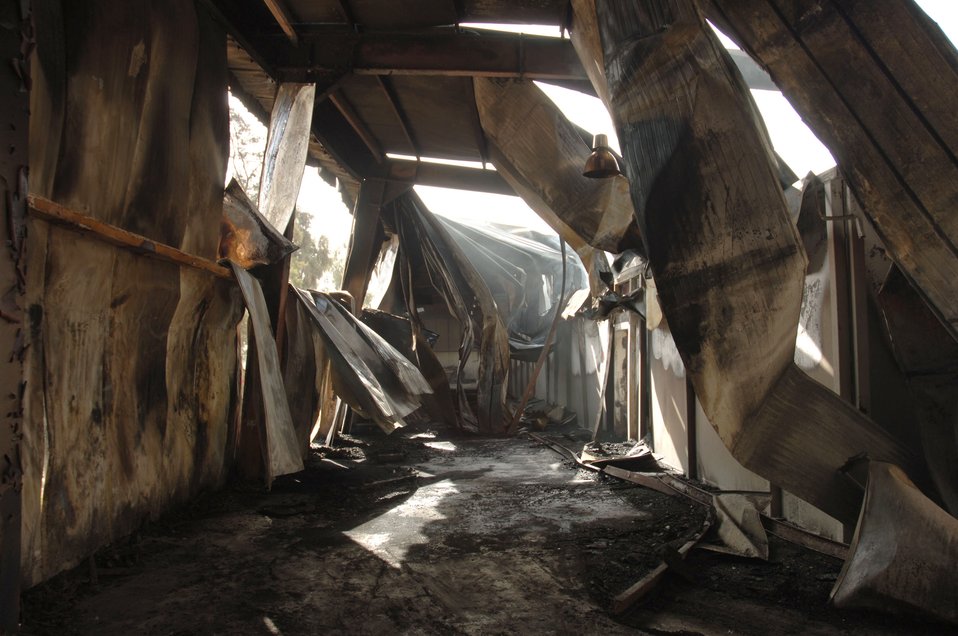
Five-alarm blaze

Fire destroyed half of a weapons training facility at Victory Base Complex, Iraq, March 11. American firefighters from Sather Air Base, Camps Victory and Liberty joined Iraqi firefighters from the training facility and Baghdad International Airport to battle the blaze.